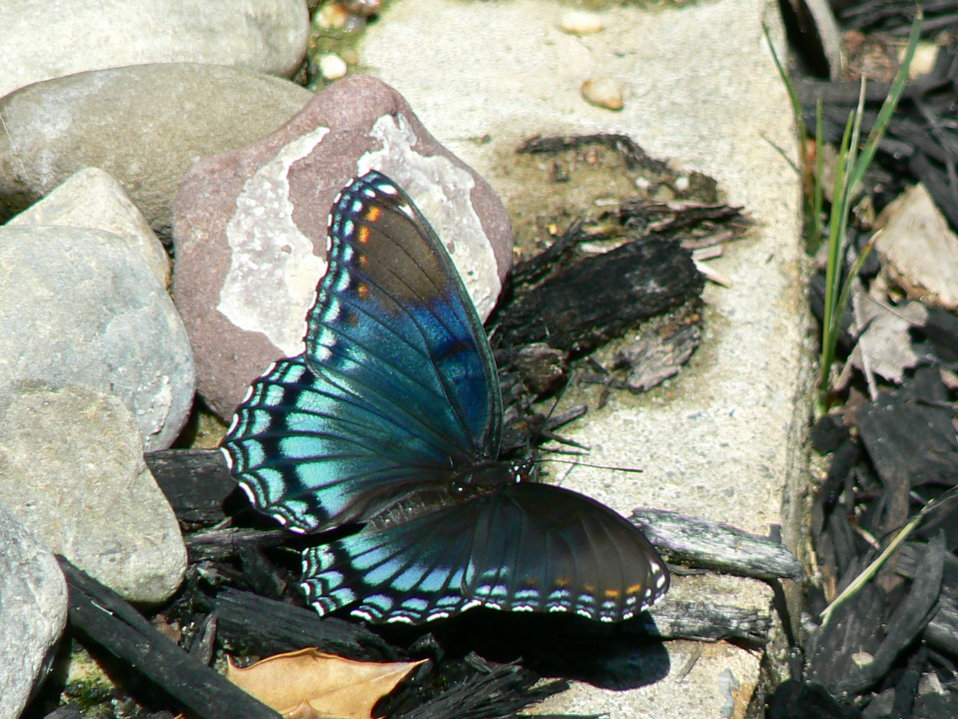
Red-spotted purple at Cape May National Wildlife Refuge.